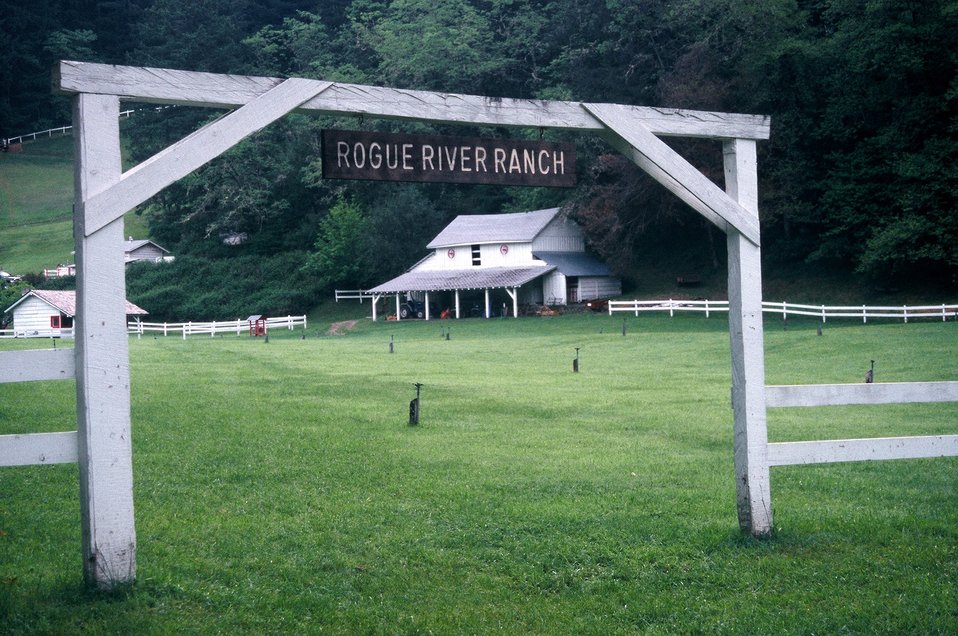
Wild section of the Rogue River from Grave Creek to Foster Bar May 19 to May 22.